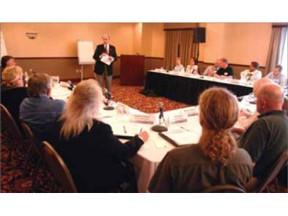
Site Specific Advisory Boards (SSAB)

The Site Specific Advisory Boards (SSAB), at the request of the Assistant Secretary or the Field Managers, may provide advice and recommendations concerning EM site-specific. Here Former Assistant Secretary of Energy for EM James Rispoli addresses attendees at the SSAB chairs meeting in Knoxville, TN.